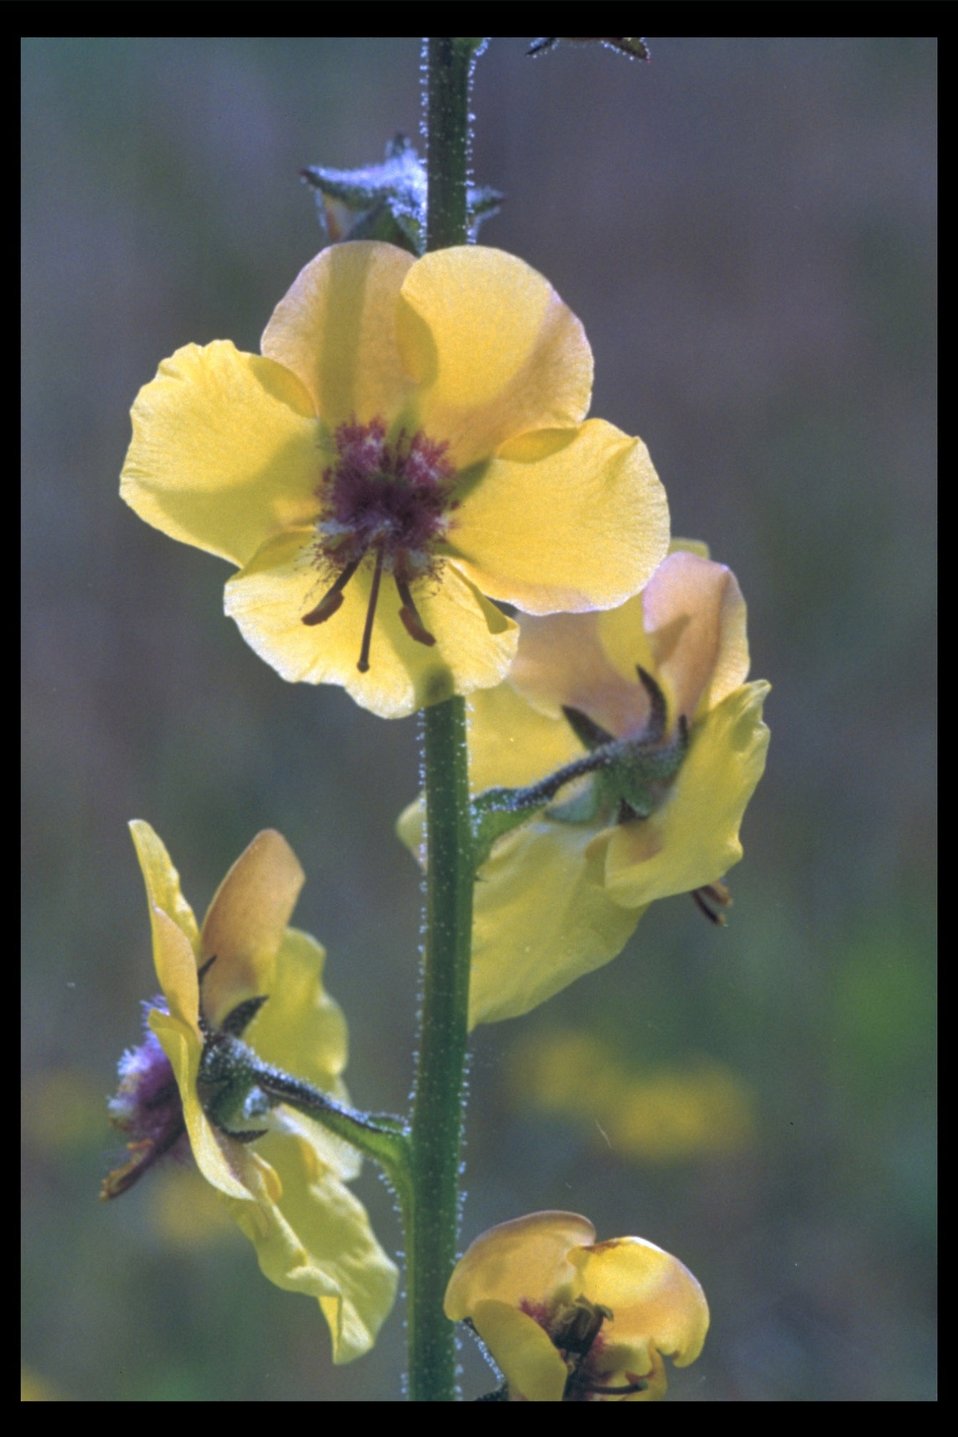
Moth Mullein (Verbascum blattaria) along Wasson Canyon Road east of Medford.